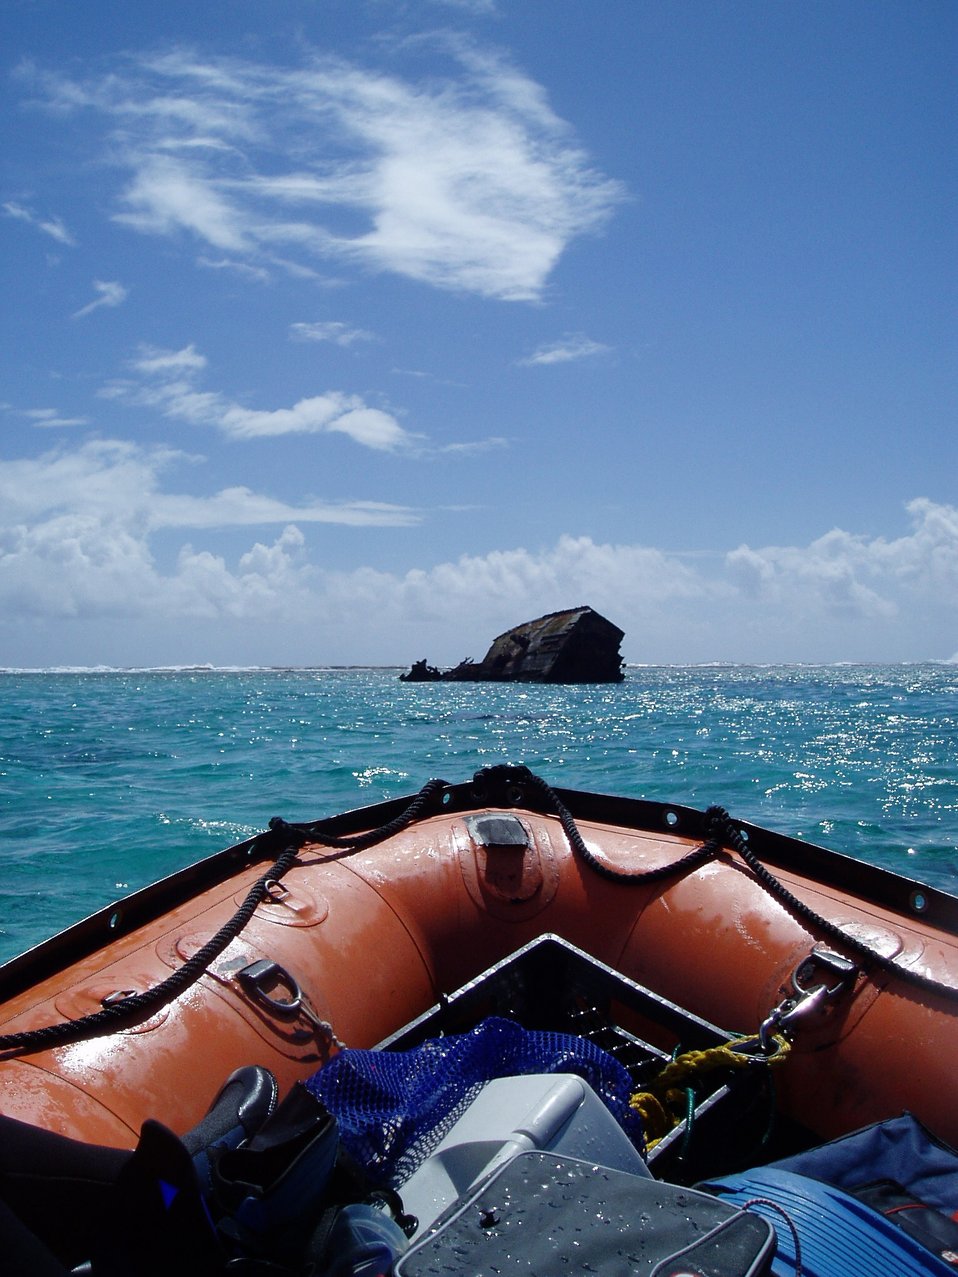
Approaching the remains of a shipwreck in a small boat off the NOAA Ship HI'IAlAKAI.